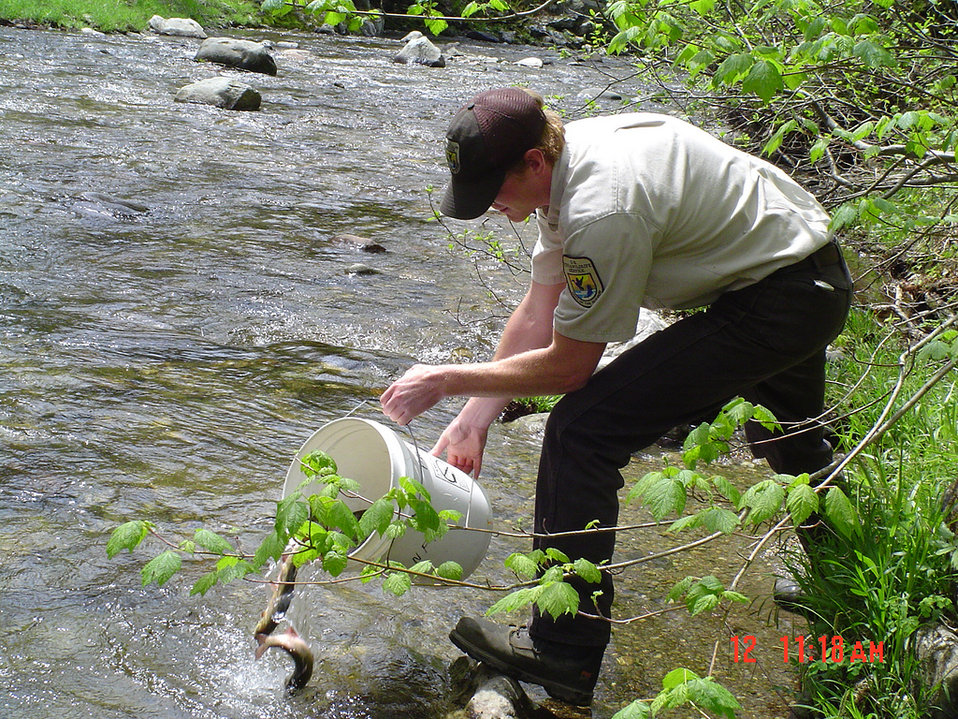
Brook trout stocking

U.S. Fish and Wildlife Service